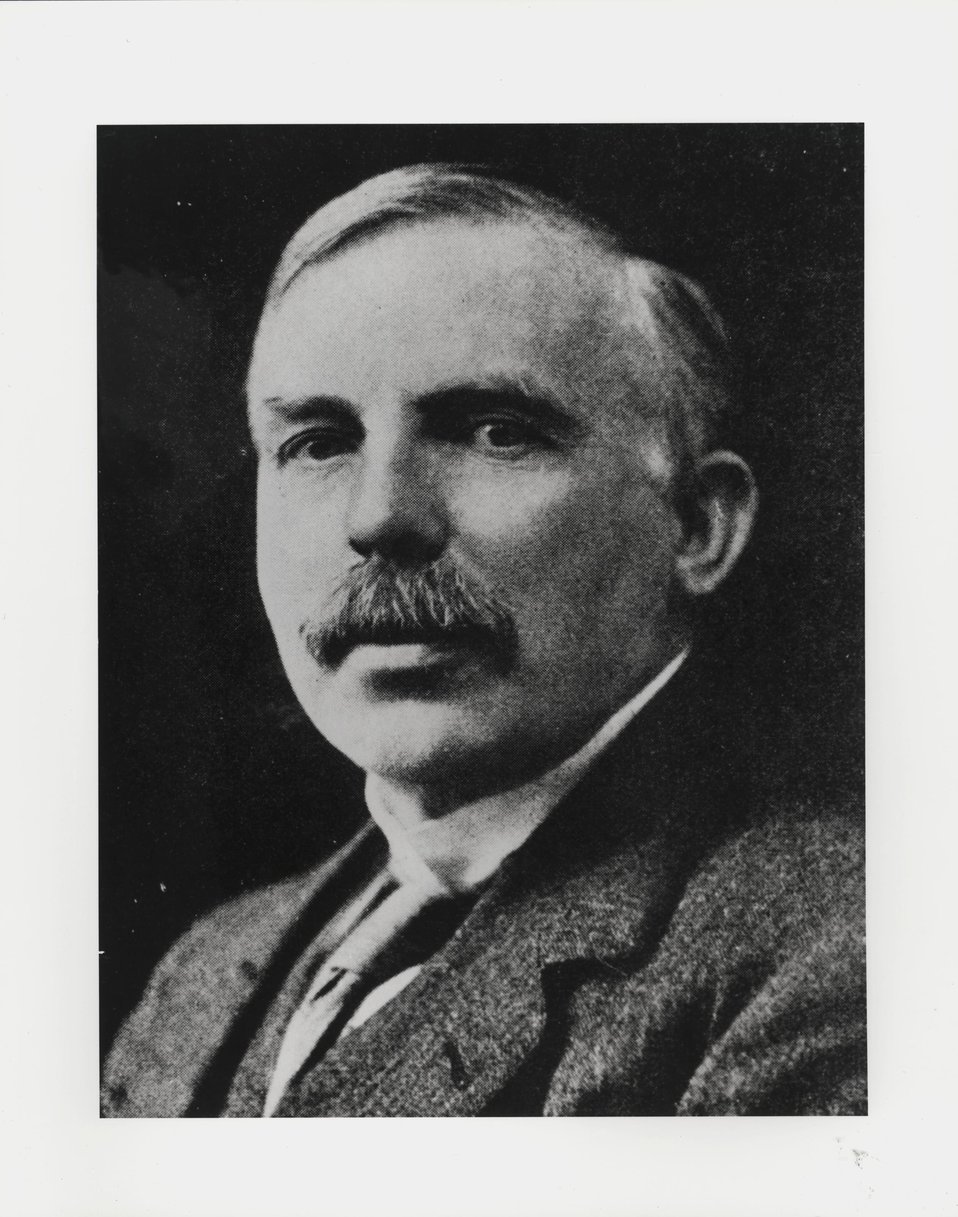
Earnest Rutherford